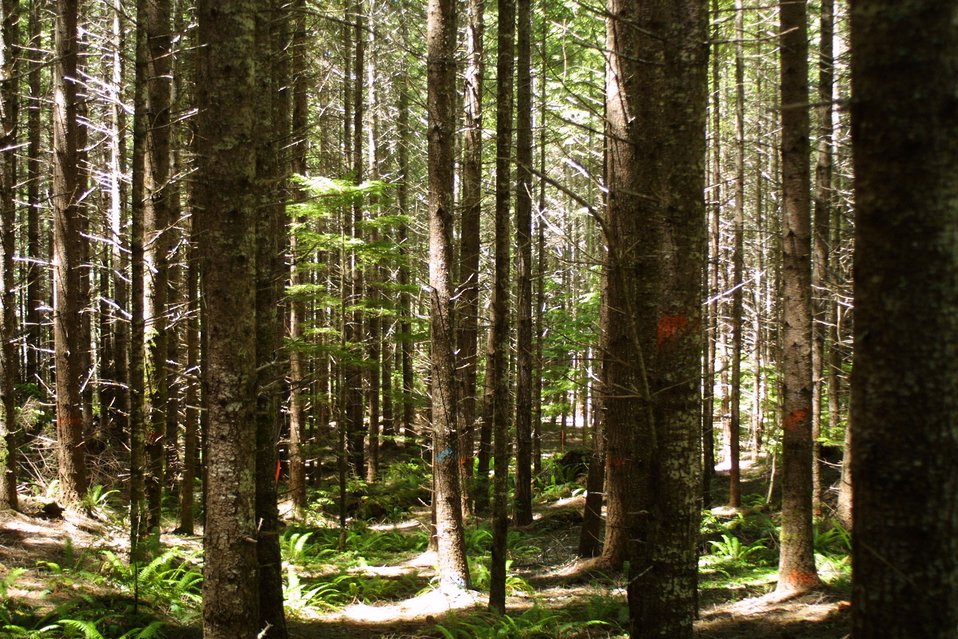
Camas East Timber Sale in Late Successional Reserve.